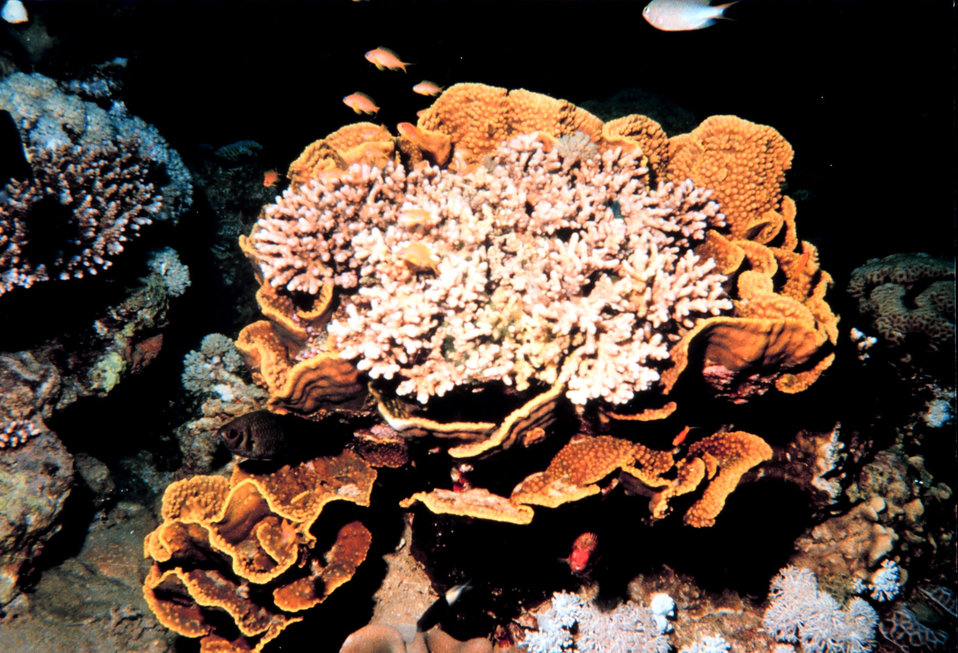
Cabbage coral with different species of coral growing inside. Various reef fish including orange anthias.